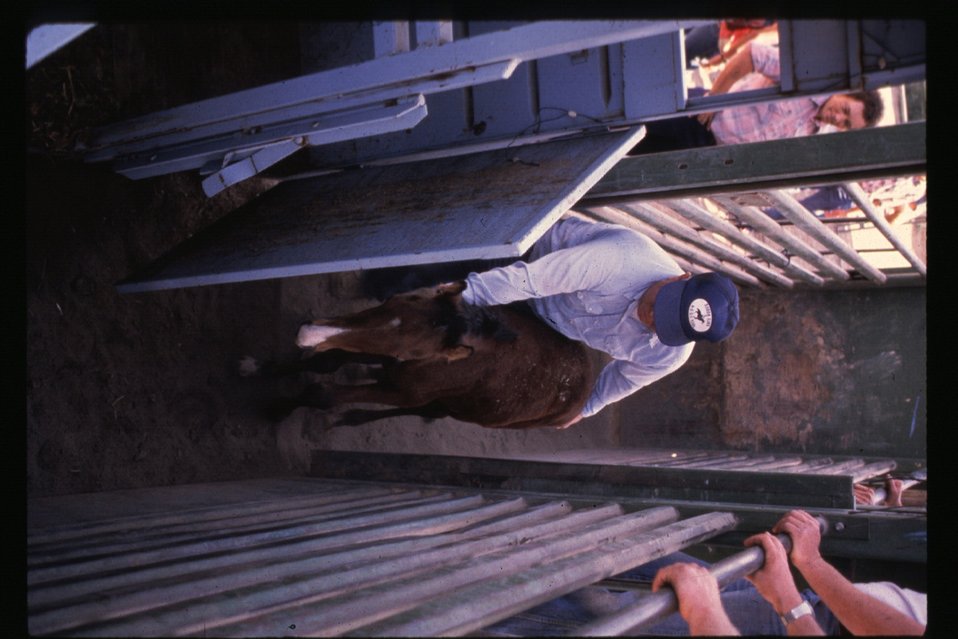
Wild colt Wild Horse and Burro Adoption Program LSRD Lower Snake River District